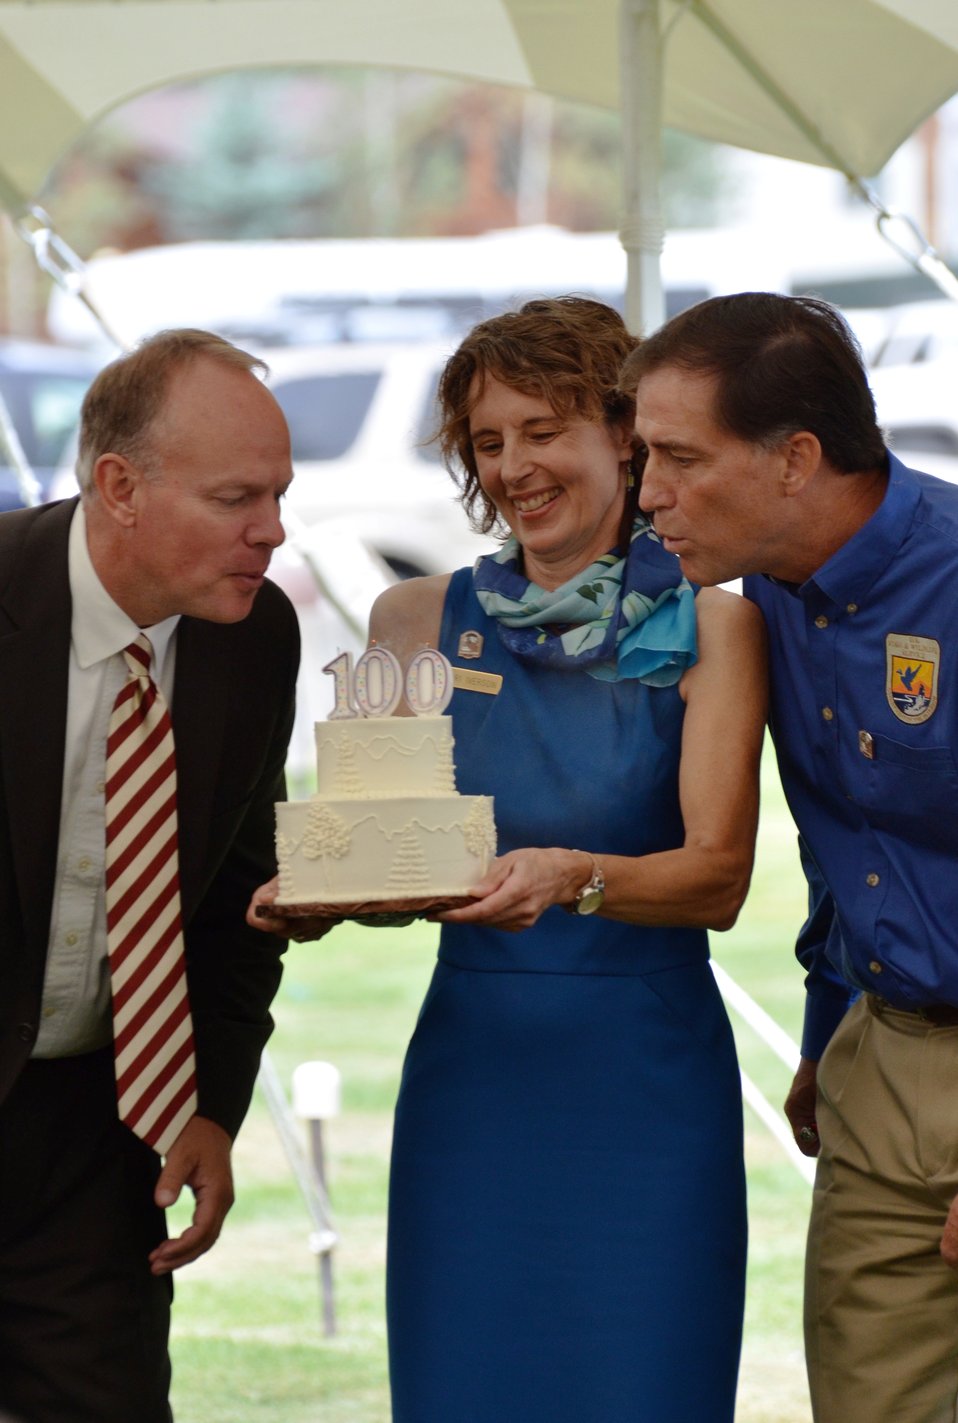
Make a Wish!

Wyoming Governor Matt Mead, left, and USFWS Director Dan Ashe, right, blow out the candles on the National Elk Refuge's birthday cake during the refuge's centennial ceremony on August 10, 2012.

Credit: USFWS / Bobby Harkey, National Elk Refuge volunteer